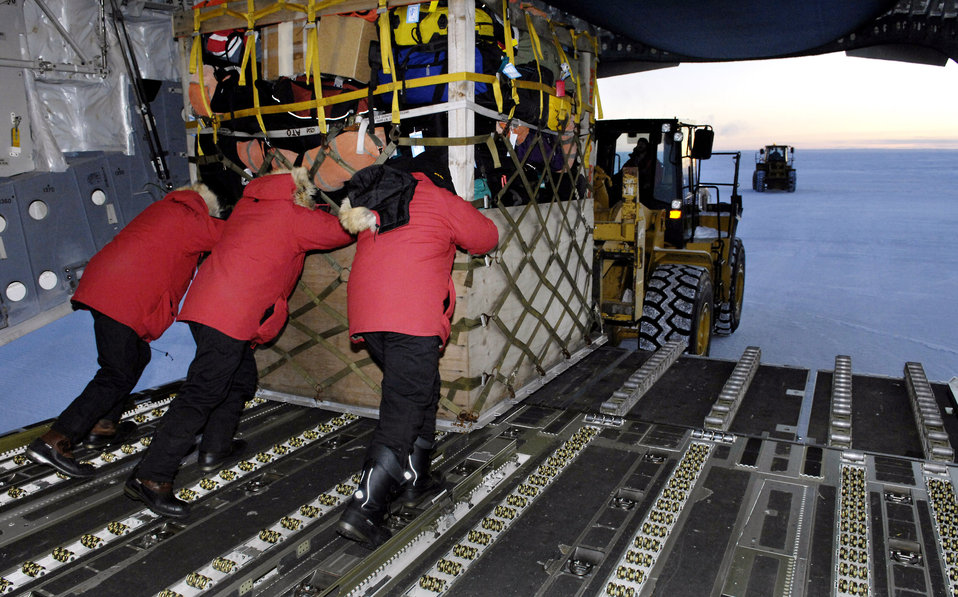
Operation Deep Freeze 2007-08 begins

Loadmasters unload a pallet from their C-17 Globemaster III during the winter fly-in for Operation Deep Freeze Aug. 20 at Pegasus Runway in Antarctica. A C-17 and 31 Airmen from McChord Air Force Base, Wash., began the annual winter fly-in augmentation of scientists, support personnel, food and equipment for the U.S. Antarctic Program at McMurdo Station. WinFly is the opening of the first flights to McMurdo Station, which closed for the austral winter in February.